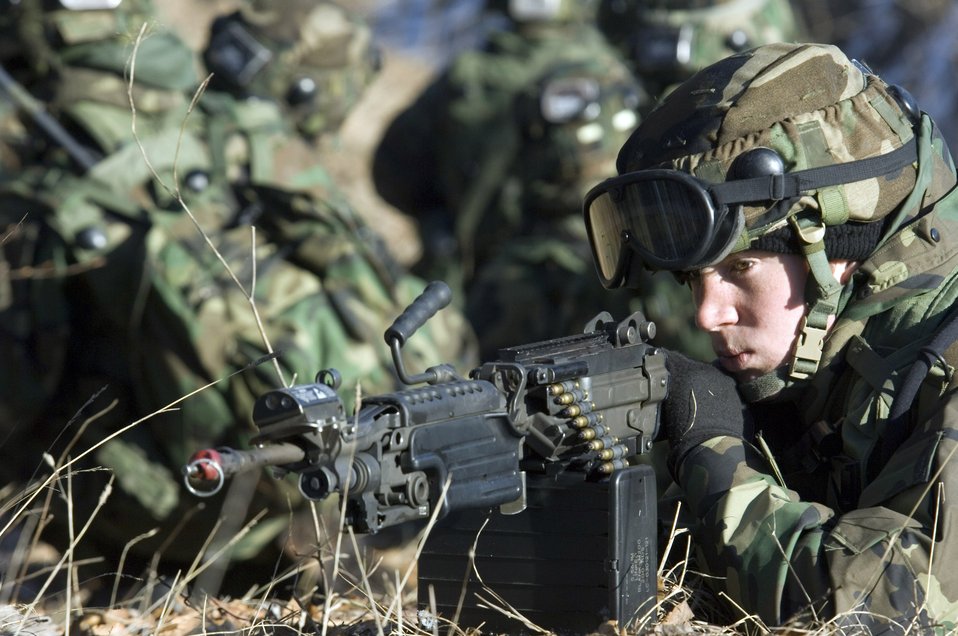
Creek Defender

BAUMHOLDER, Germany (AFPN) -- Airman 1st Class Robert Spears provides cover for his squad during foot patrol training. Airman Spears is a security force specialist with the 52nd Security Forces Squadron at Spangdahlem Air Base, Germany. He participated in Creek Defender in southwestern Germany earlier this month.